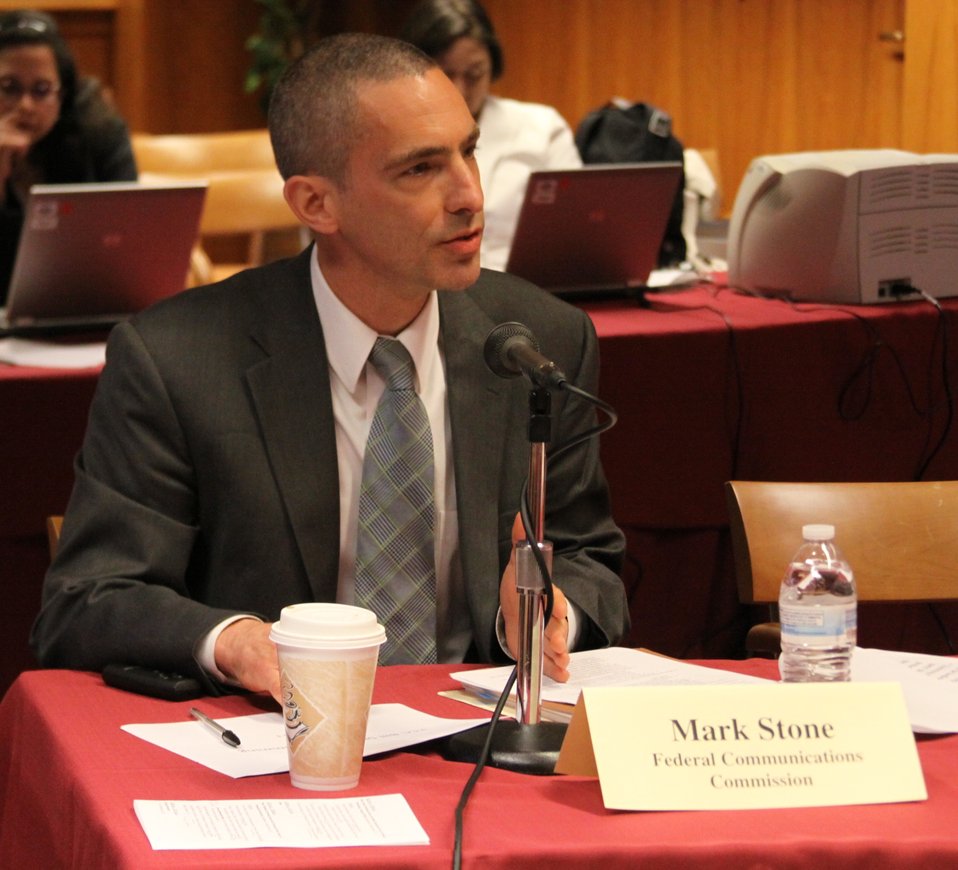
April 17, 2013 Bill Shock and Cramming Workshop - Mark Stone, Deputy Chief, Consumer and Governmental Affairs Bureau, Federal Communications Commission